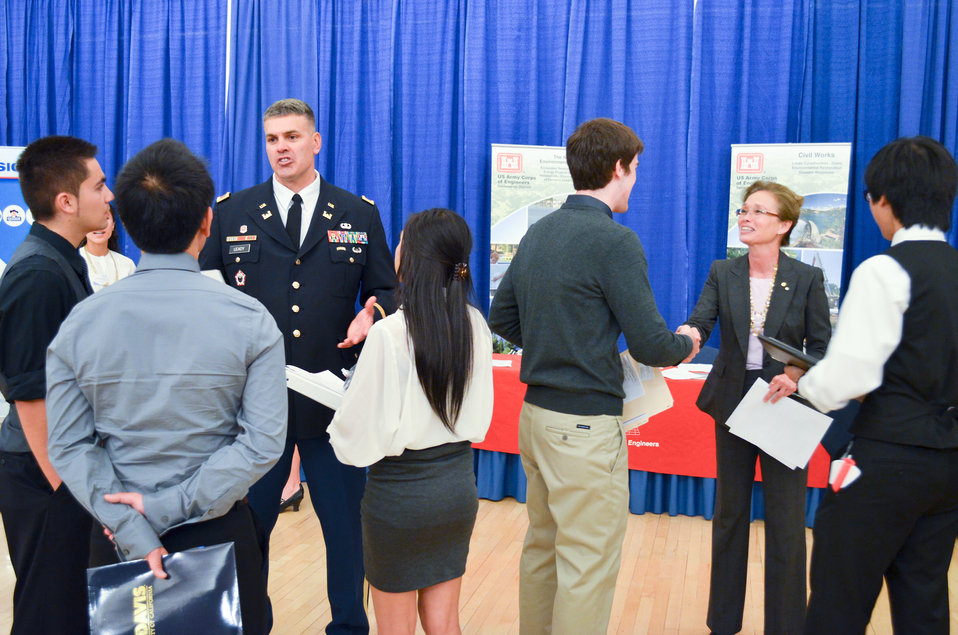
District leaders discuss career, internship opportunities at UC Davis Night with IndustryDSC 0127 chosen

U.S. Army Corps of Engineers Sacramento District’s commander Col. Bill Leady and Linda Finley, programs and project support branch chief, speak to attendees at Night with Industry 2012, a networking event at the University of California – Davis in Davis, Calif., Nov. 1, 2012. The event allowed engineering students to discuss career and internship opportunities with industry leaders.